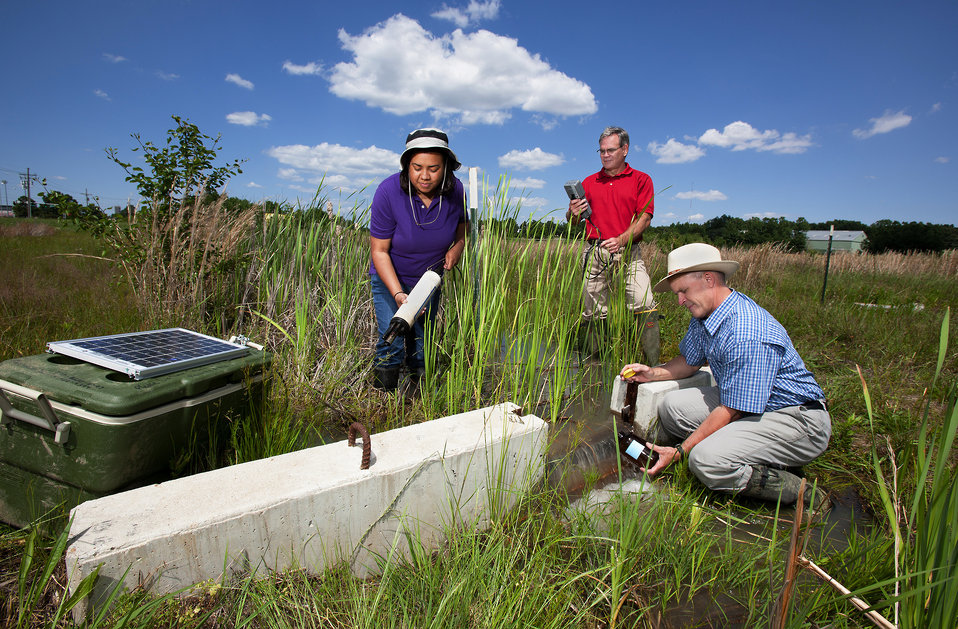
Arkansas State University graduate assistant Traci Hudson (left) and U.S. Department of Agriculture (USDA) Agricultural Research Service (ARS) soil scientist Martin Locke (center) measure water quality while Arkansas State University professor Jerry Farris (right) collects another water sample for analysis on Sept. 30, 2003.